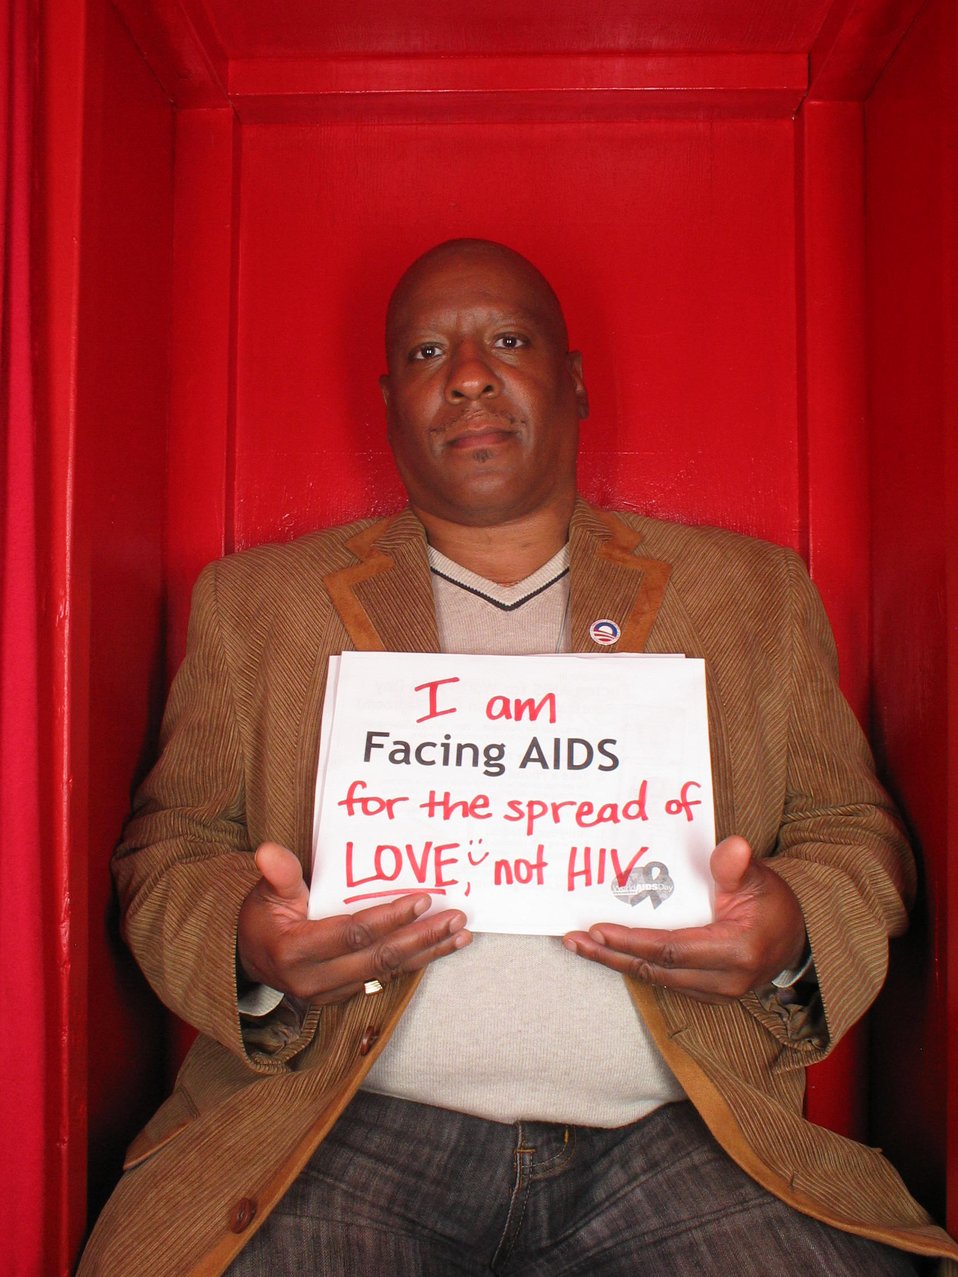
I am Facing AIDS for the spread of love not HIV